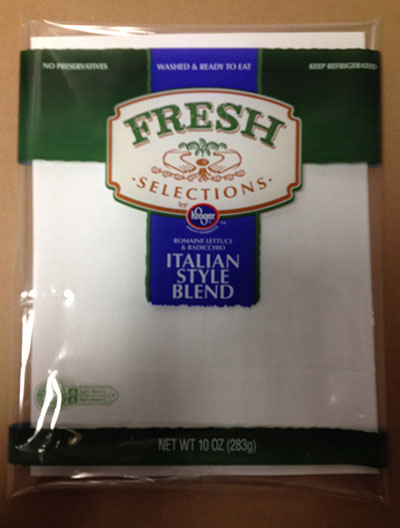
RECALLED – Variety of Bagged salads

March 13, 2014 – Product Recall – Dole Fresh Vegetables Voluntarily Recalls Limited Number of Bagged Salads Due to Possible Health Risk
.